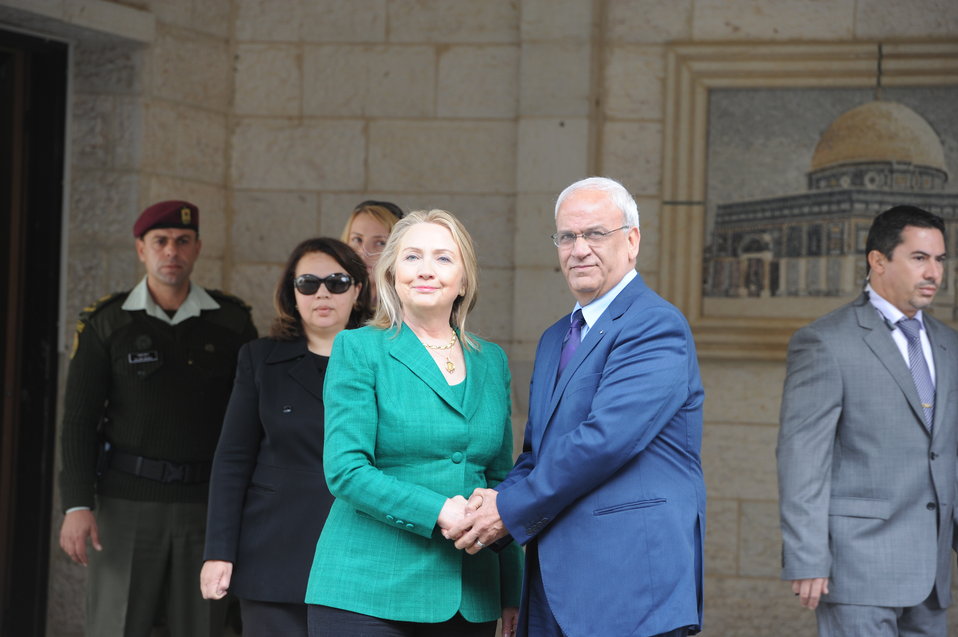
Secretary Clinton Meets With Palestinian Authority President Abbas

U.S. Secretary of State meets with Palestinian Authority President Mahmoud Abbas in Ramallah, November 21, 2012.